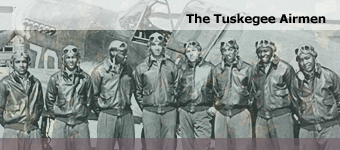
The Tuskegee Airmen history spotlight graphic .